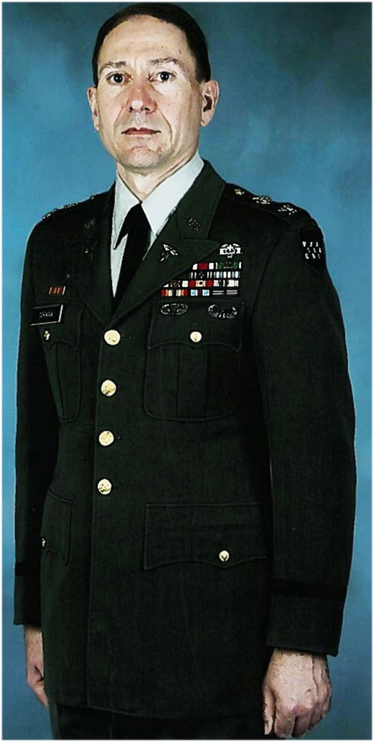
Lewis Gorman

Lew Gorman, the Partnerships Coordinator with the Endangered Species Program, was commissioned a U.S. Army 2d Lieutenant (LT), Medical Service Corps, in 1971 and served until 2001. Nearly six years were on Active Duty and rest were in the Army Reserve. He was stationed on Active Duty at Ft. Richardson, Arkansas, and while in the Army Reserve, his unit was activated to Ft. Dix, New Jersey, for Operation Desert Shield/Desert Storm. He also performed temporary military duty in Japan, Germany, the Netherlands and Turkey, and reached the rank of Colonel.